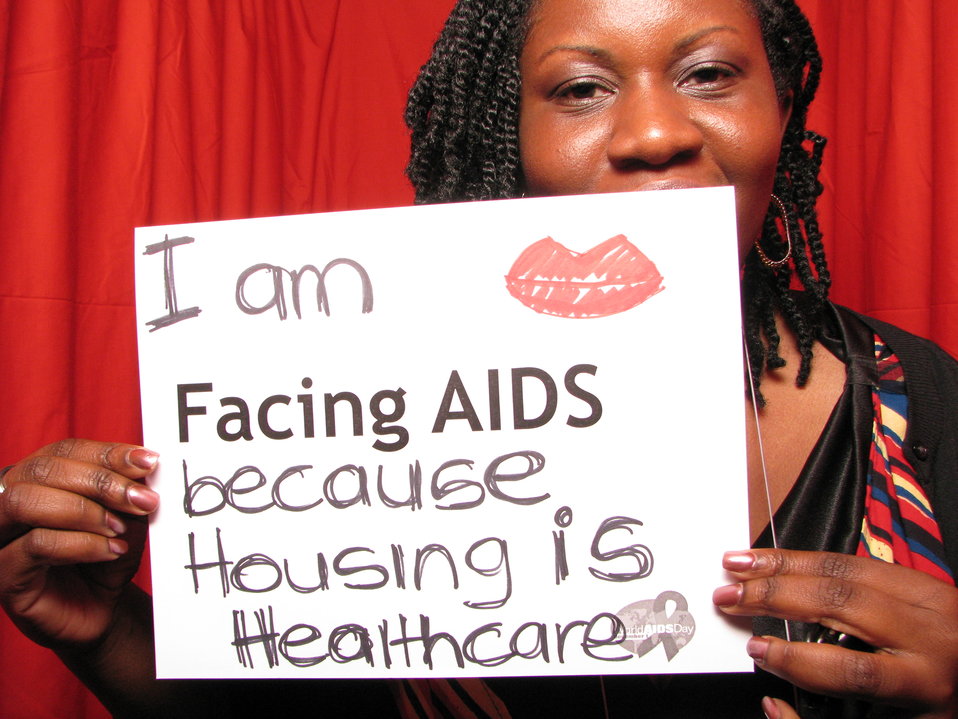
I am FACING AIDS because housing is healthcare.

From the AIDS.gov photo booth at the U.S. Conference on AIDS, September 2010 (Orlando, FL).